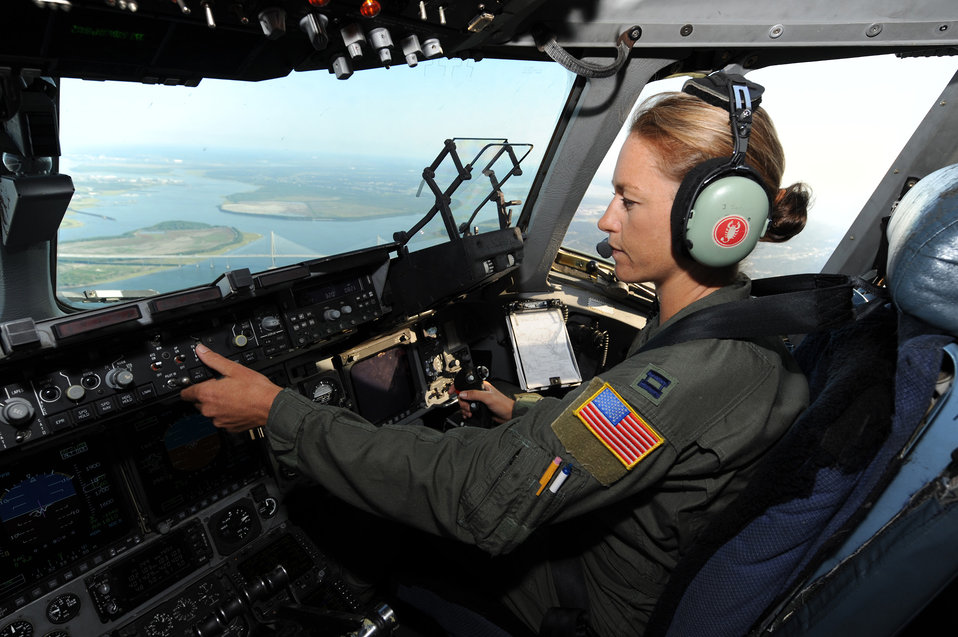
Ironman pilot

Capt. Jamie Turner flies a routine training mission from Joint Base Charleston, S.C., Sept. 15, 2010. Captain Turner was selected as one of 1,800 Ironman World Championship competitors. She will swim 2.4-miles through ocean waves, bike 112-miles and run a 26.2-mile marathon through challenging lava-covered terrain. Captain Turner is a pilot with the 315th Airlift Wing.